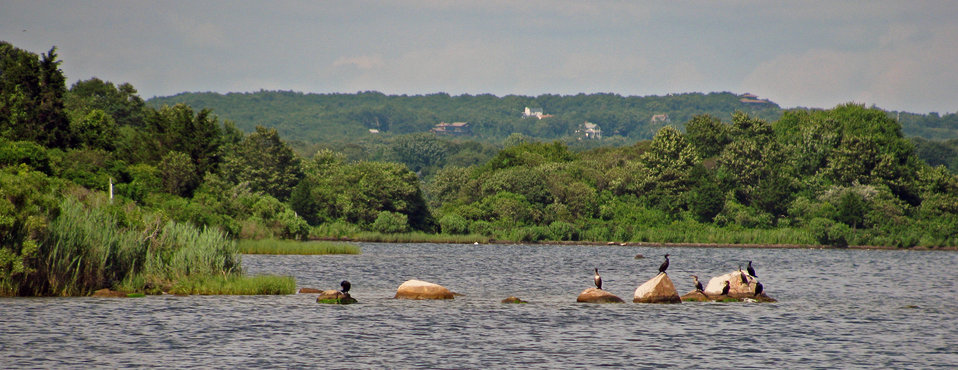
Ninigret National Wildlife Refuge